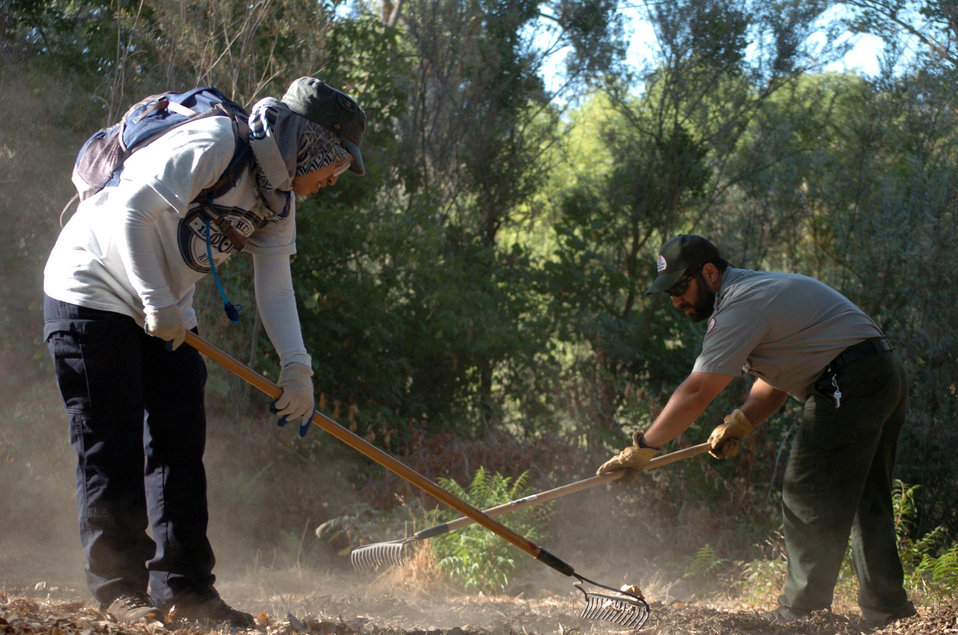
STANISLAUS RIVER PARKS, Calif. (Sept. 25, 2010) -- Jason Faridi (right), senior park ranger at Stanislaus River Parks, and a local volunteer spread wood chips over a trail near the Stanislaus River Sept. 25. More than a dozen volunteers joined Faridi and park staff picking up litter and laying out wood chips along trails as part of National Public Lands Day at the park. “Volunteers love using trails, so if they can contribute to it and see a result, they really enjoy that part,” said Faridi.